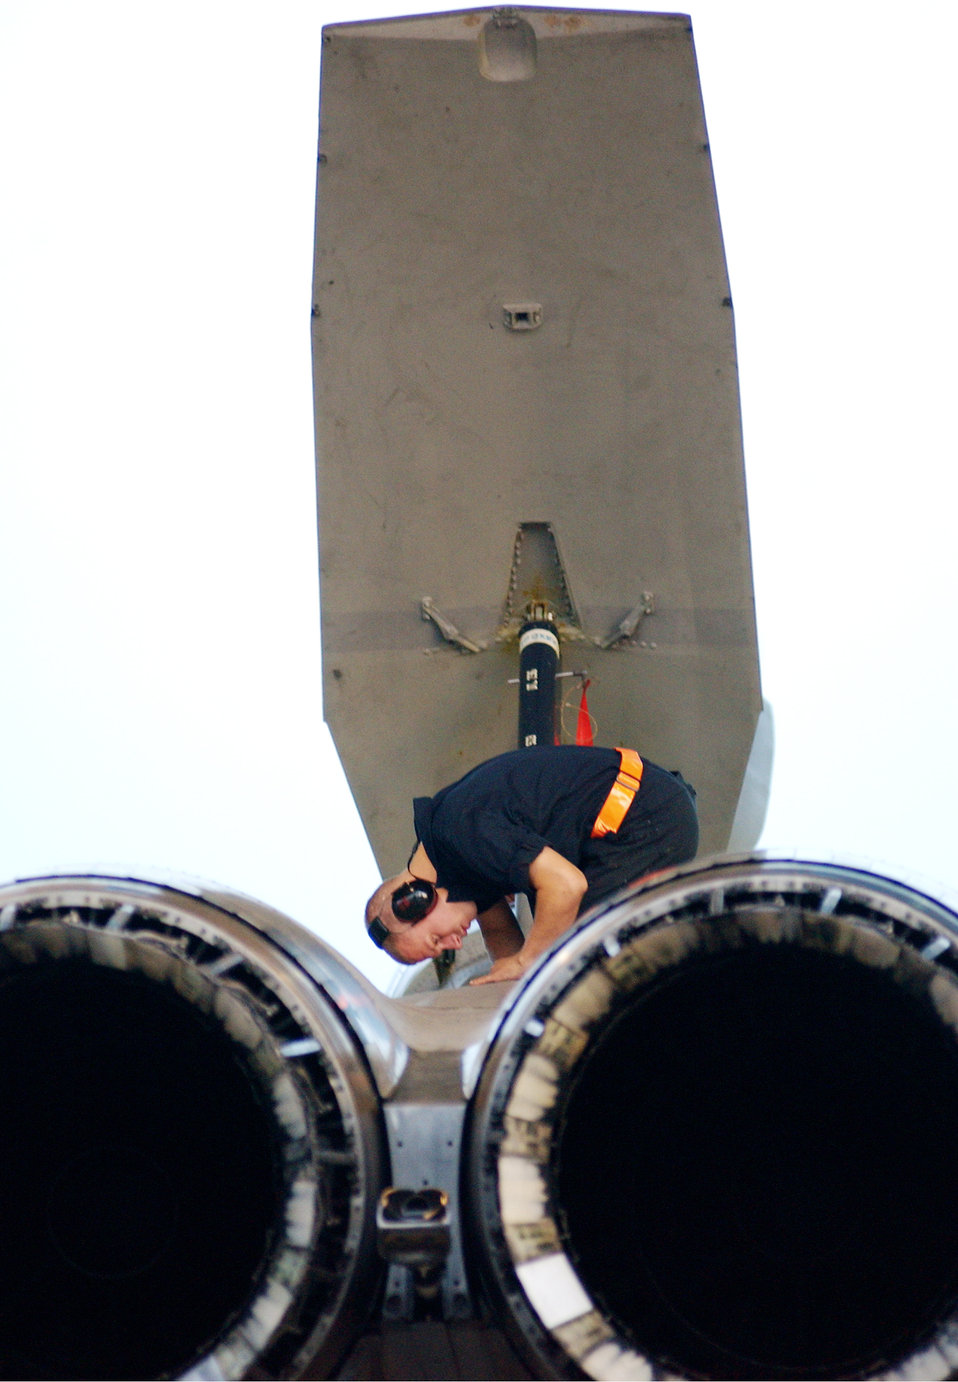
Getting to the nitty-gritty

Staff Sgt. Joseph Snow inspects an F-15 Eagle on the flightline at Kadena Air Base, Japan, Oct. 19, 2009, during Exercise Beverly High. The 18th Wing is participating in a local operational readiness exercise to test the readiness of Kadena Airmen.